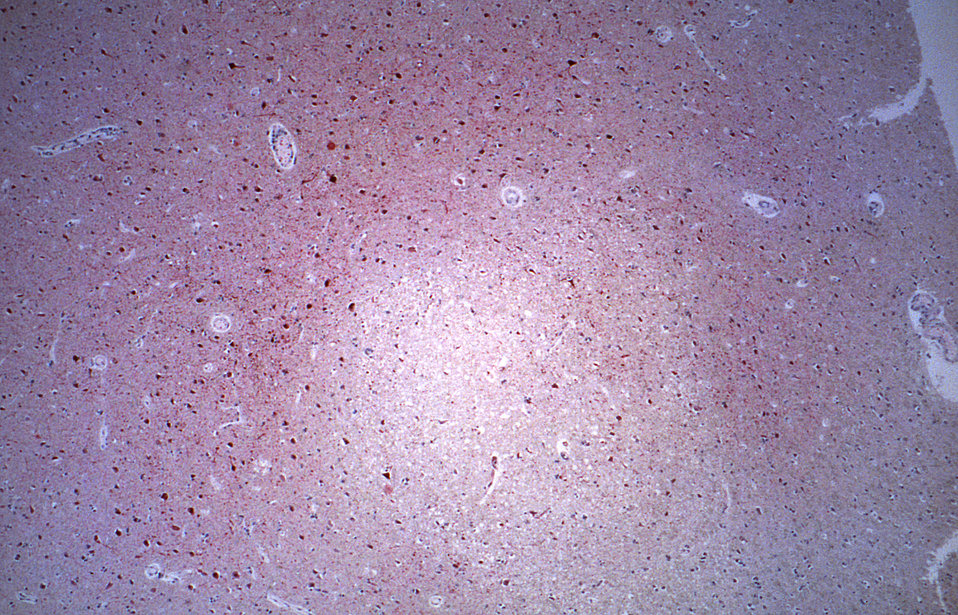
This photomicrograph revealed some of the cytoarchitectural histopathologic changes associated with a Nipah virus infection affecting the central nervous system of a human patient. In this particular case, a centrally-located target lesion can be identified.